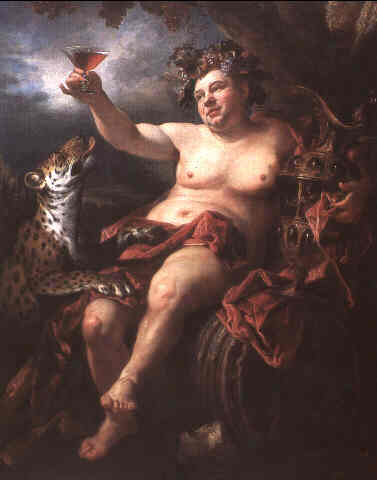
Bacchus par Millot